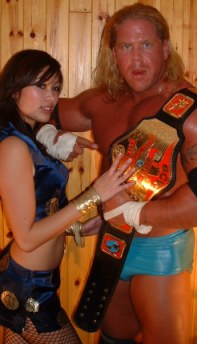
A-1 and Jade Chung in Belleville, Michigan. December 12, 2004.